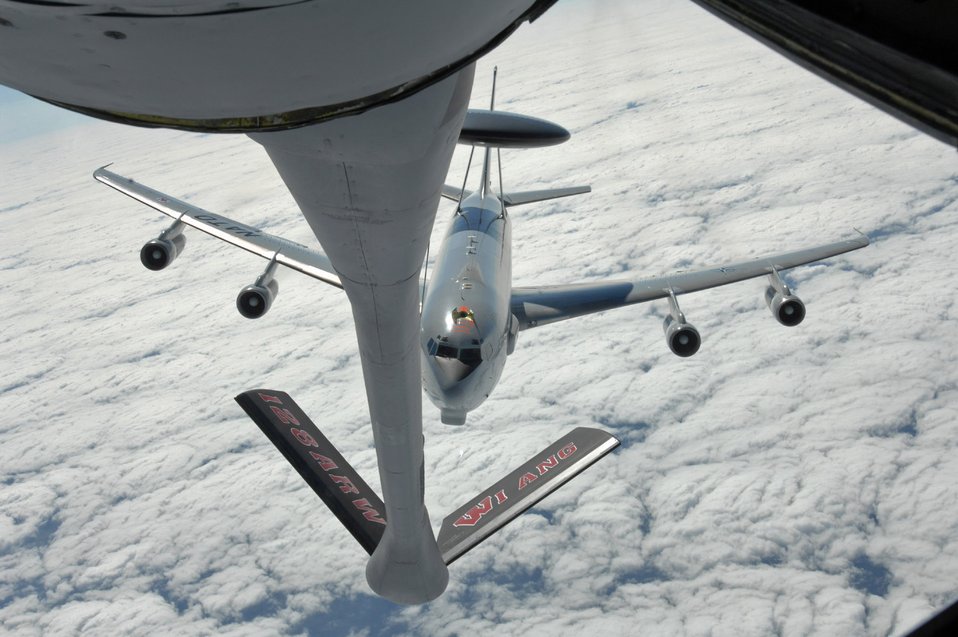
Airmen support AWACS operations

An E-3 Sentry lines up to be refueled by a KC-135 Stratotanker Sept. 13 over Germany. The KC-135 is from the 126th Air Refueling Squadron from the Wisconsin Air National Guard at Gen. Mitchell International Airport in Milwaukee, and is operating out of Spangdahlem Air Base, Germany, for a two-week mission to support NATO operations.